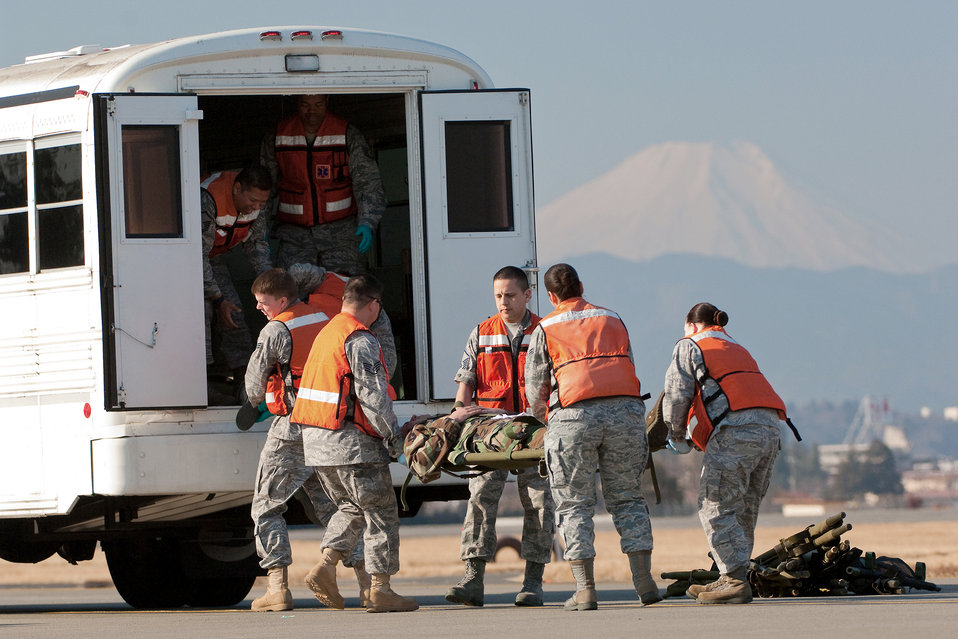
Emergency management exercise

Members of the 374th Aerospace Medicine Squadron upload patients from a simulated aircraft crash into a medical transportation bus during an emergency management exercise Feb. 4, 2011, at Yokota Air Base, Japan.